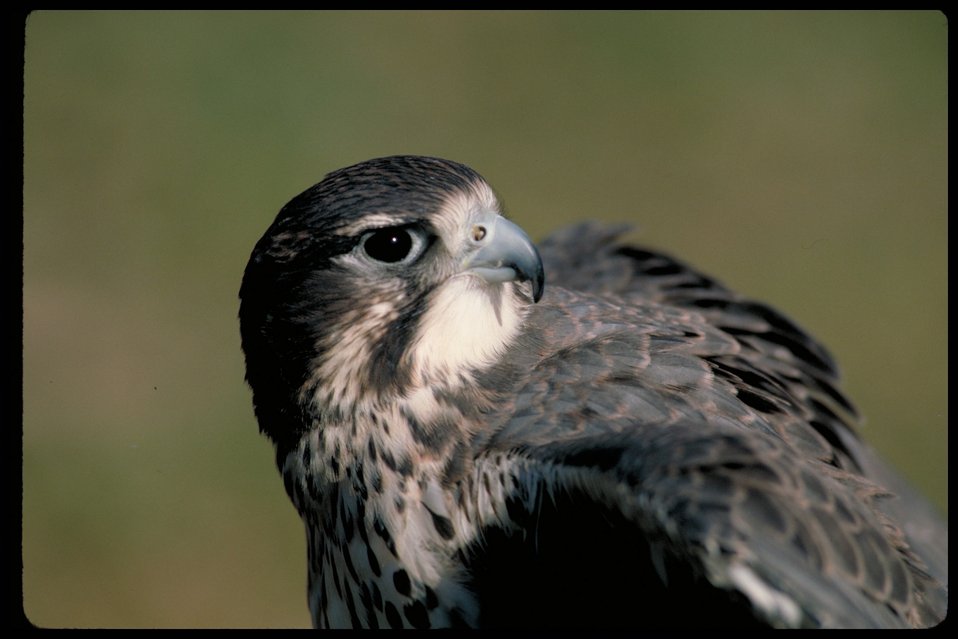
Peregrine Falcon Birds of Prey National Conservation Area BOP Owyhee Field Office LSRD Lower Snake River District